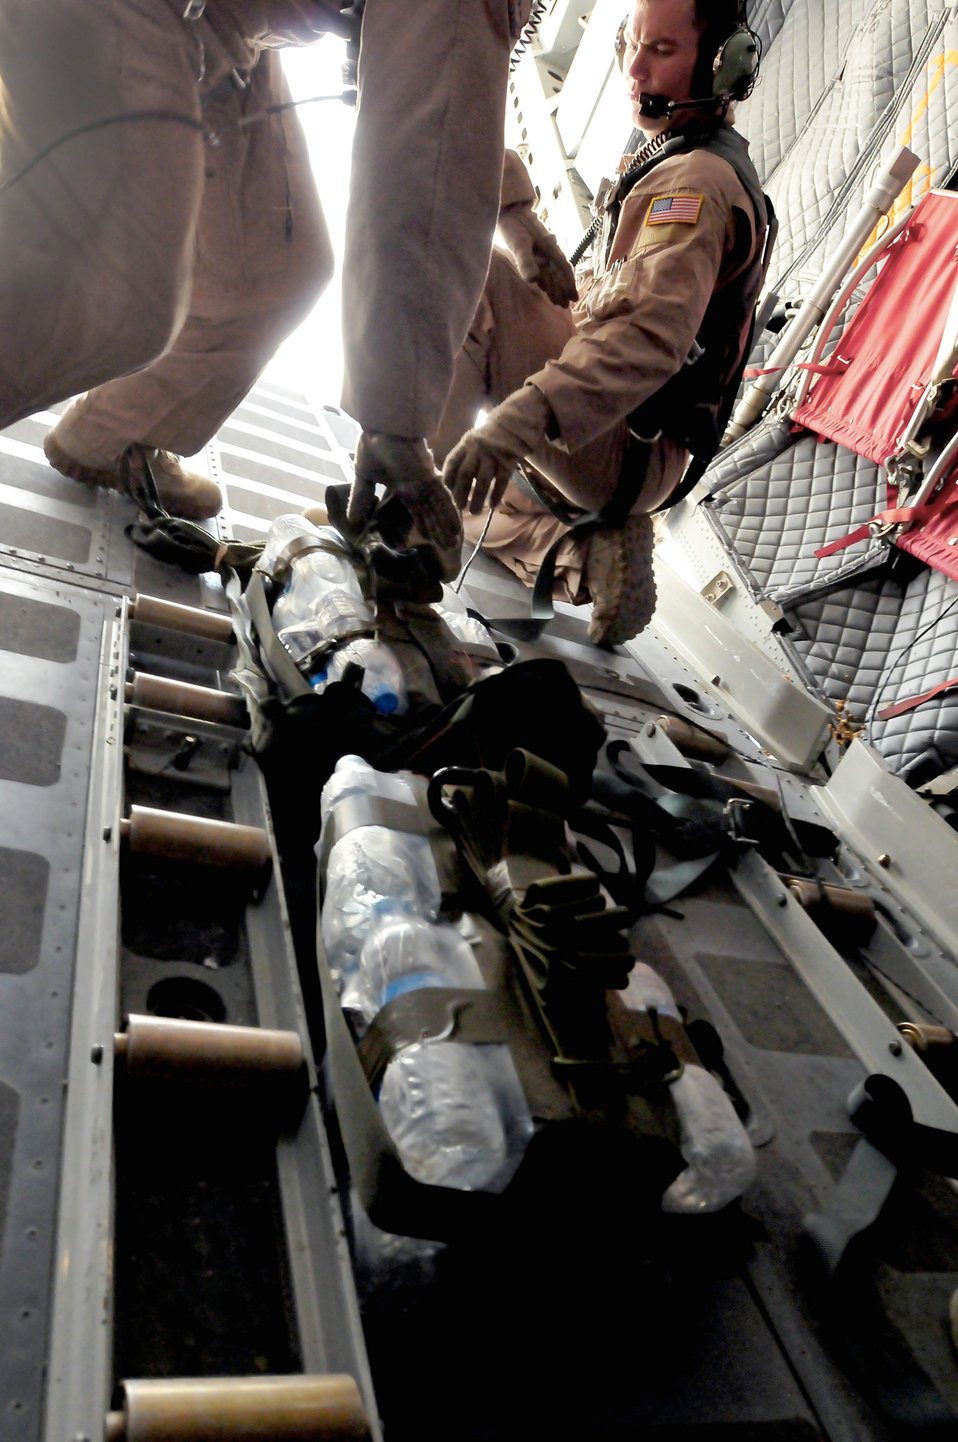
C-27 over Afghanistan

Master Sgt. Chris Ringland and Staff Sgt. Talon Martin prepare supplies for an airdrop July 1, 2010 over Afghanistan. This is the first air drop conducted by any crew of the C-27 Spartan in the region.